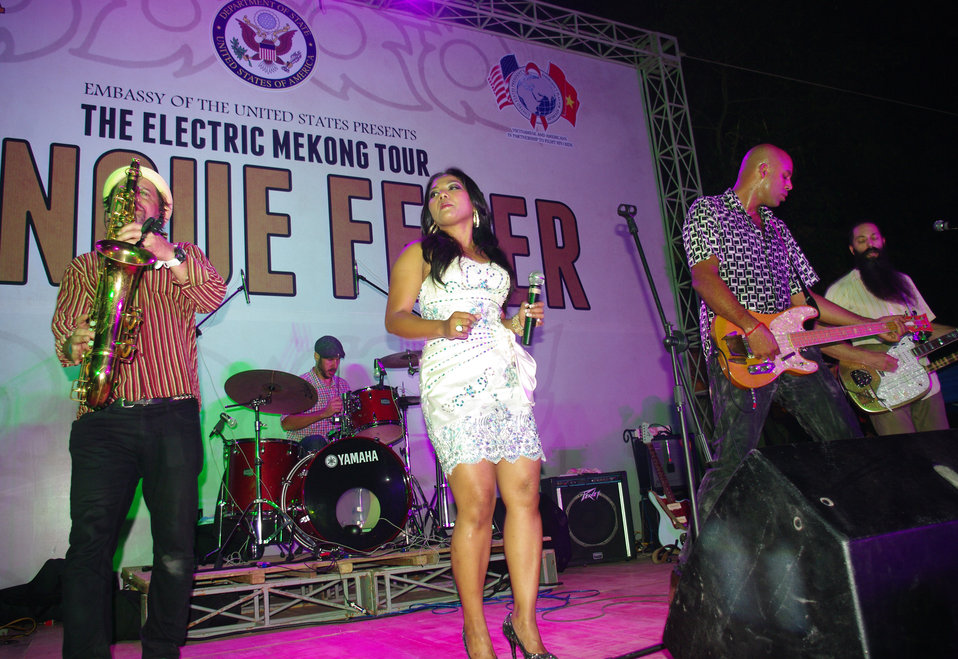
PEPFAR, U.S. Embassy Host Dengue Fever Concert in Hanoi